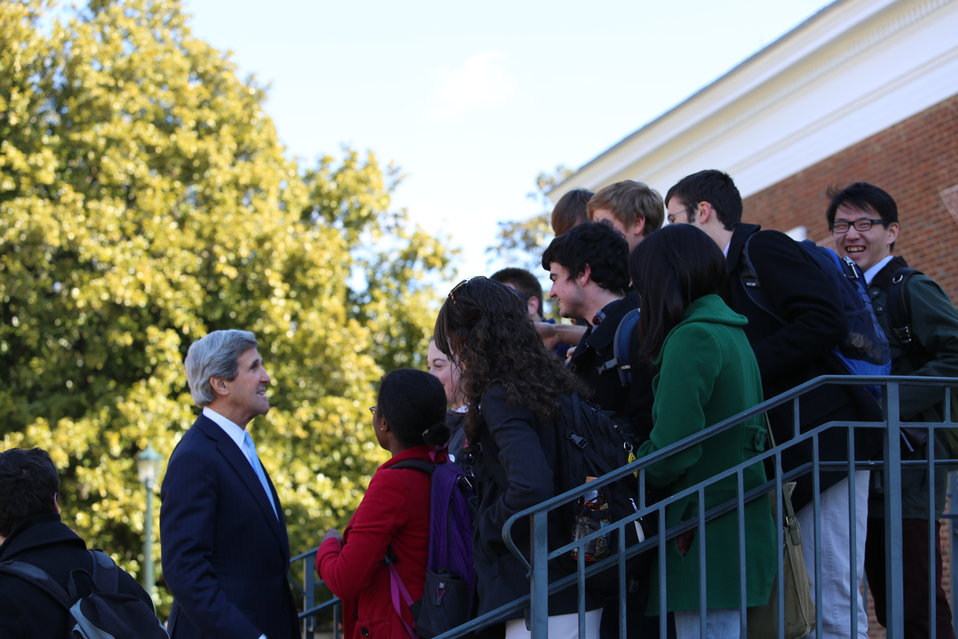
Secretary Kerry Meets With UVA Students

U.S. Secretary of State John Kerry meets with students at the University of Virginia in Charlottesville, Virginia, February 20, 2013.